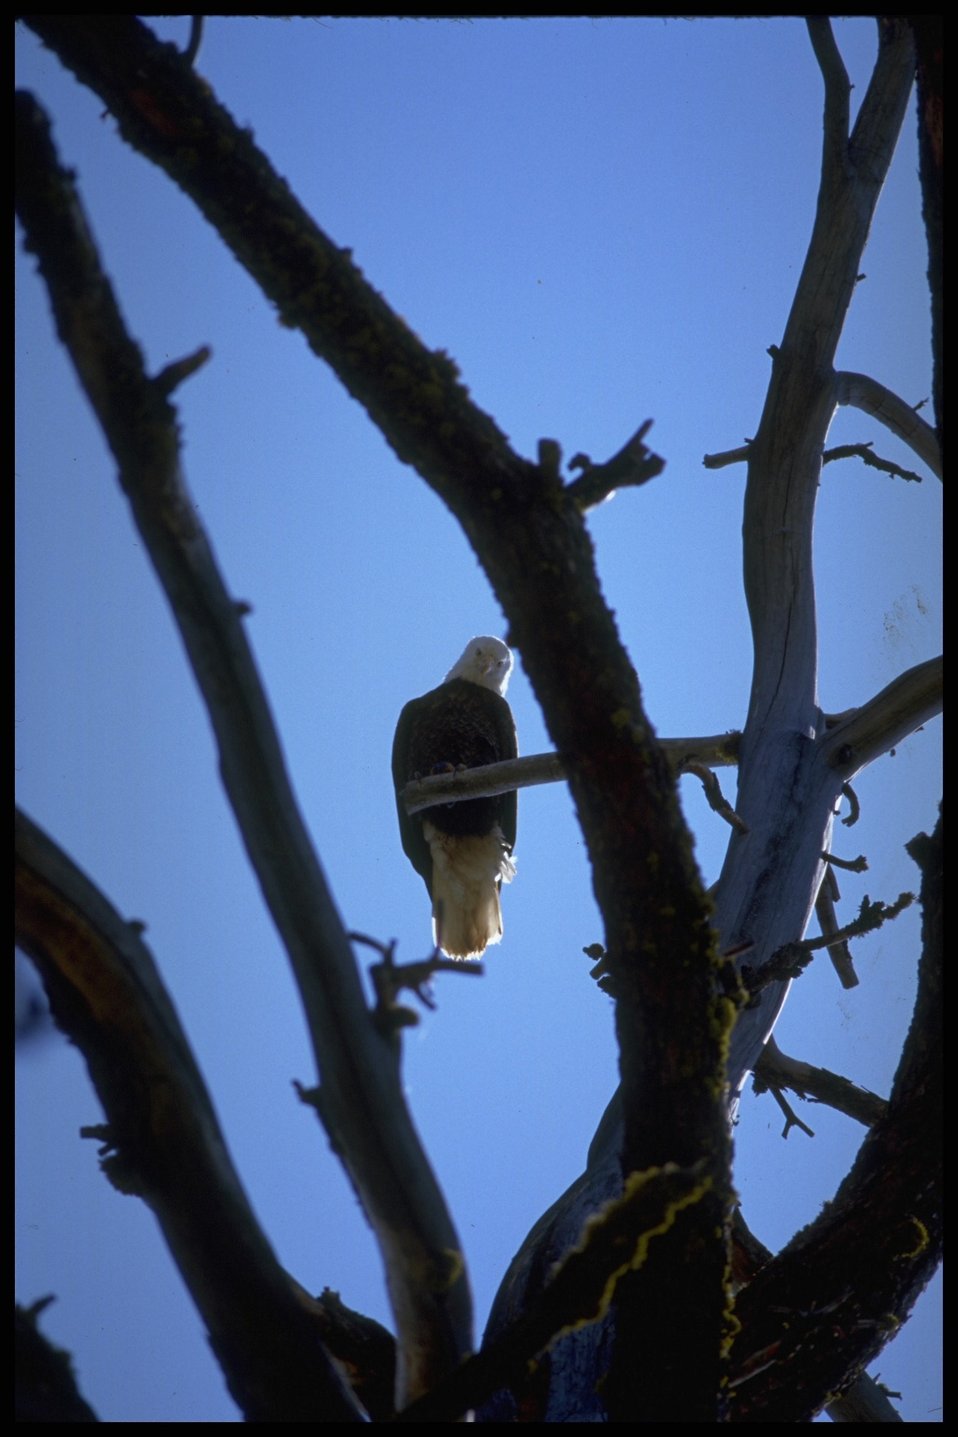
Far shot of Bald Eagle perched on tree branch. Lakeview District.